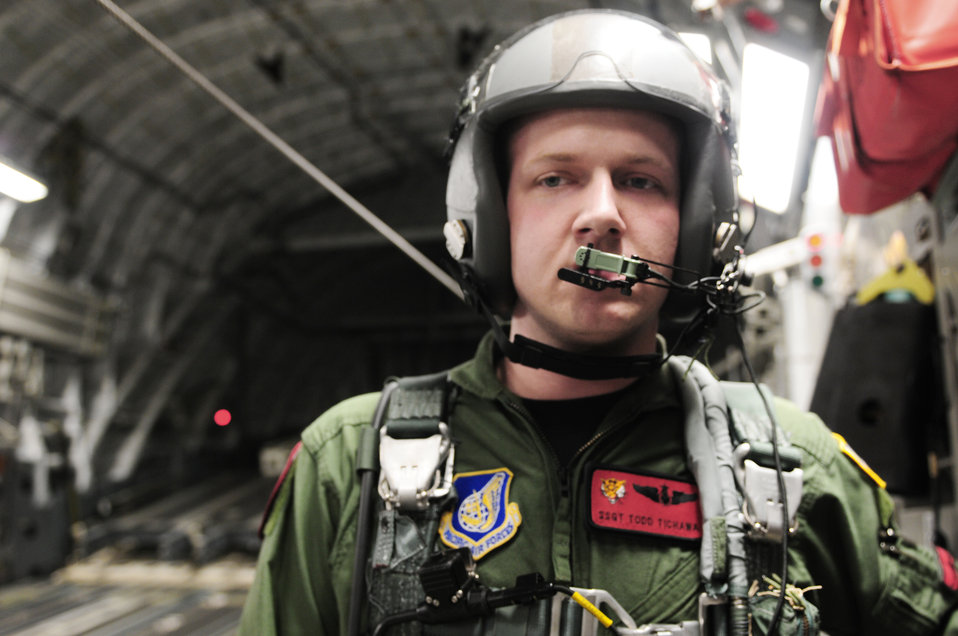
Globemaster conducts first mission for Cope India

Staff Sgt. Todd Tichawa prepares to open the bay doors to a C-17 Globemaster III during the first combined high-altitude low-opening mission of exercise Cope India Oct. 19, 2009. Sergeant Tichawa is a loadmaster from the 535th Airlift Squadron at Hickam Air Force Base, Hawaii. Cope India is humanitarian assistance disaster relief exercise.